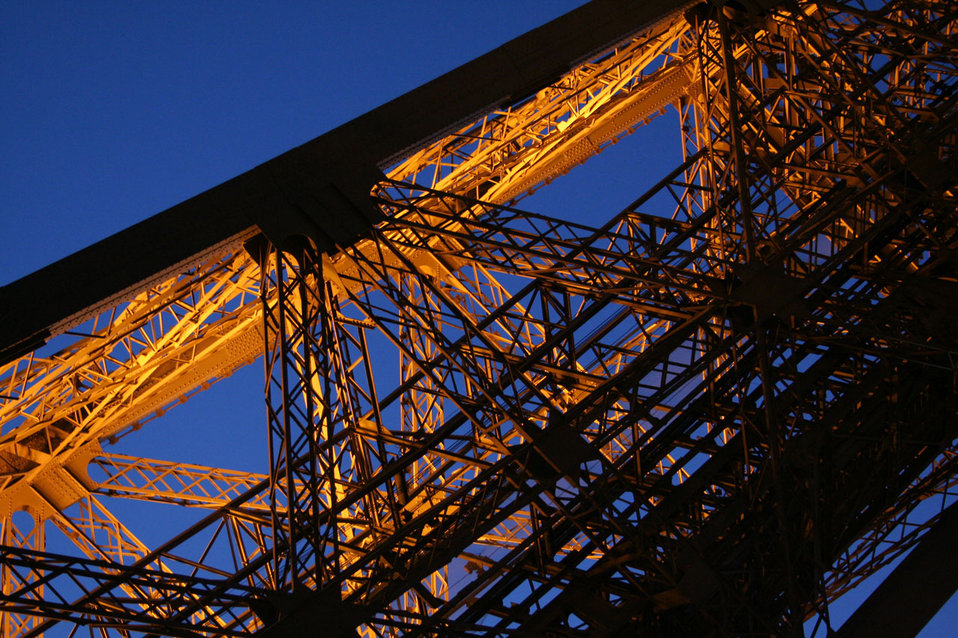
Eiffel tower detail

Detail of the structure of the eiffel tower.